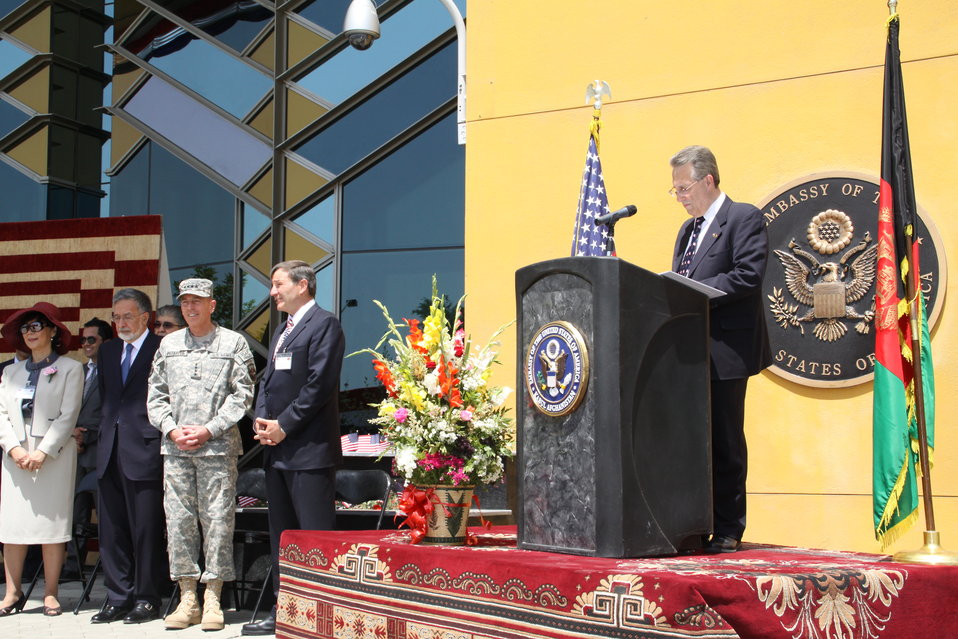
Kabul Official July 4th Celebration